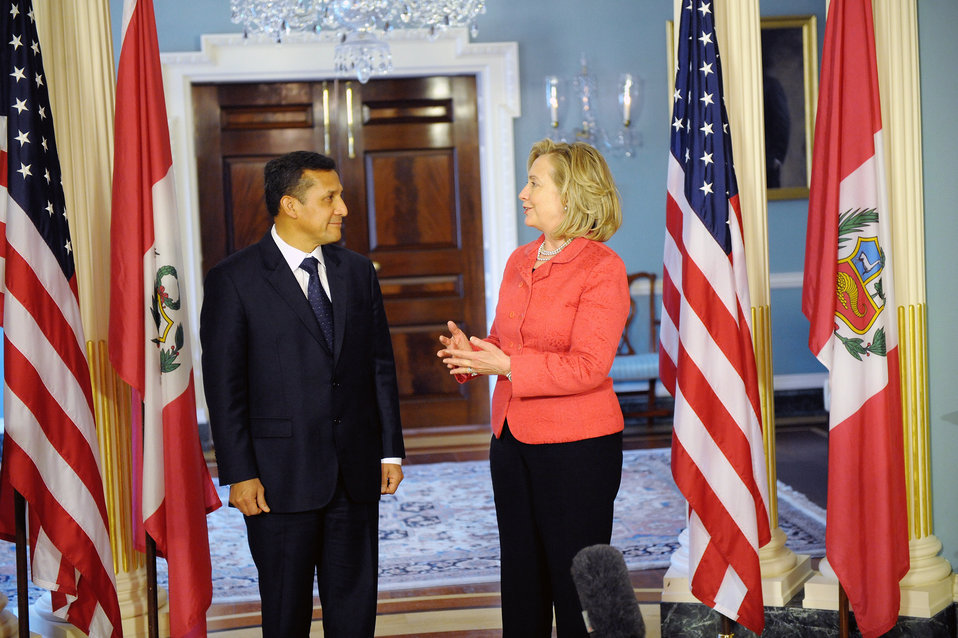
Secretary Clinton Meets With Peruvian President-Elect Humala

U.S. Secretary of State Hillary Rodham Clinton meets with Peruvian President-Elect Ollanta Humala, at the U.S. Department of State in Washington, D.C., on July 6, 2011.